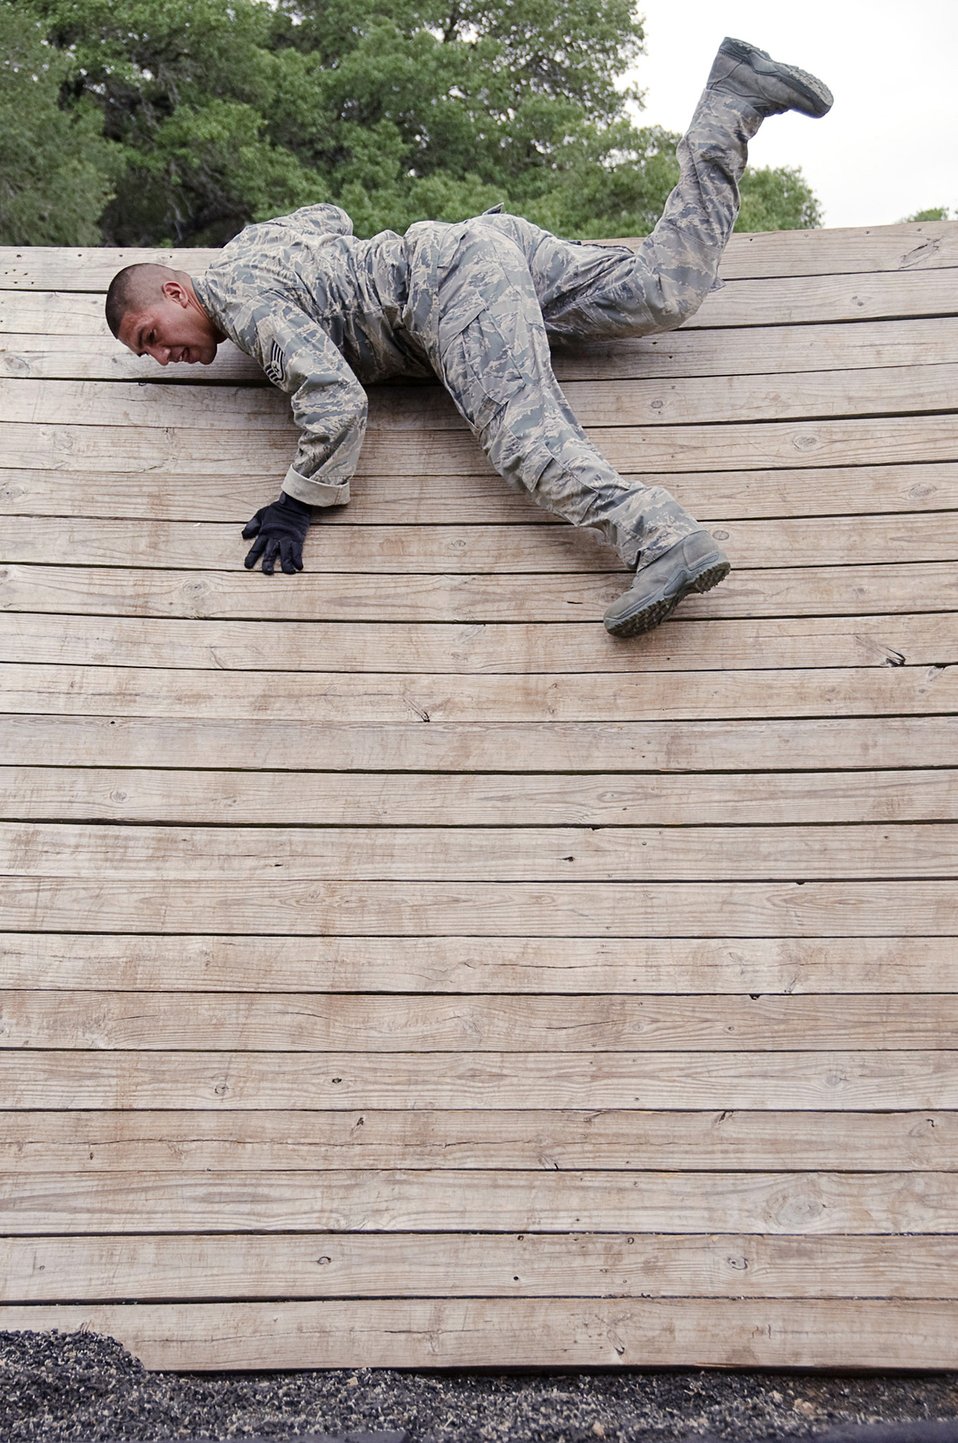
National Police Week 2010

Staff Sgt. Jacinto Nunez of the 902nd Security Forces Squadron flips over the top of a high wall and prepares to slide down during the obstacle course and ruck march event held May 12, 2010, at Camp Bullis, Texas, during National Police Week. Nearby Randolph Air Force Base fielded two teams for the event with Sergeant Nunez's team placing third with a time of 1:08:16.